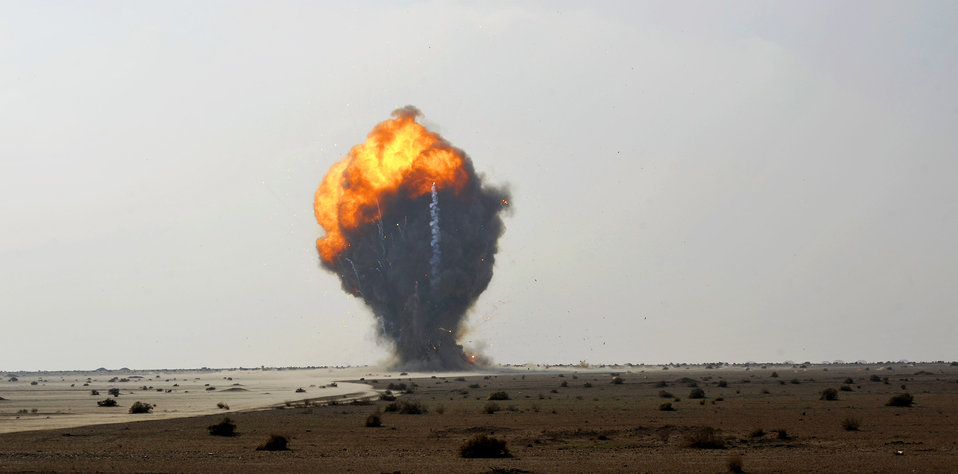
Over 1,000 pounds of explosive ordnance explodes in a controlled detonation performed by Iraqi and U.S. Air Force explosive ordnance disposal technicians Nov. 23, 2009, at Mahmudiyah, Iraq. The Airmen are assigned to the 447th Expeditionary Civil Engineer Squadron.